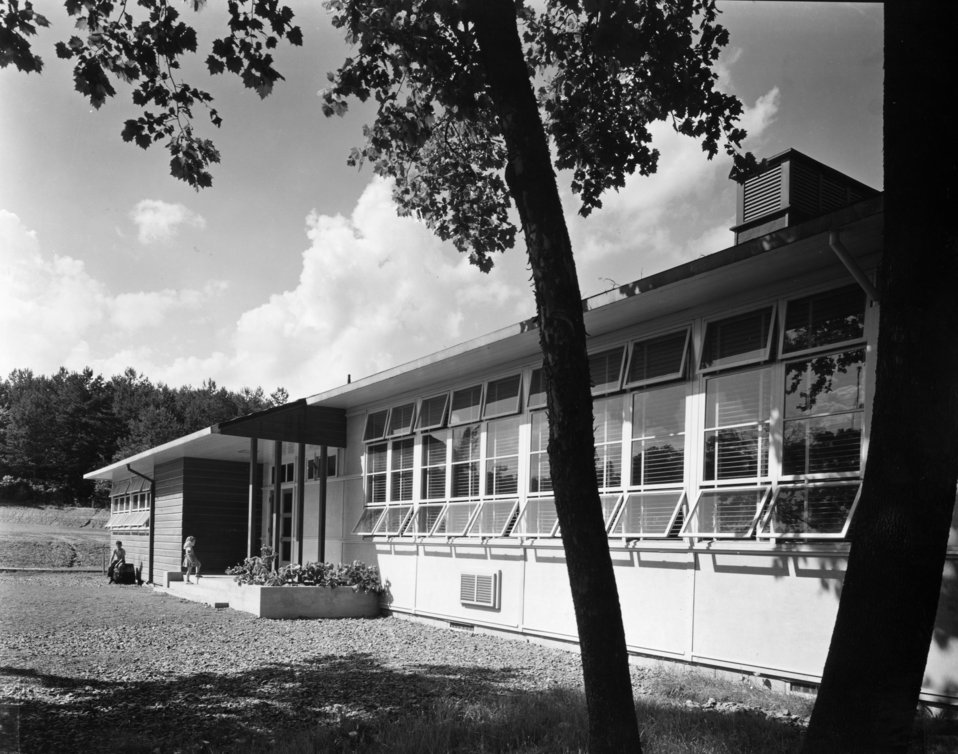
Schools at Oak Ridge